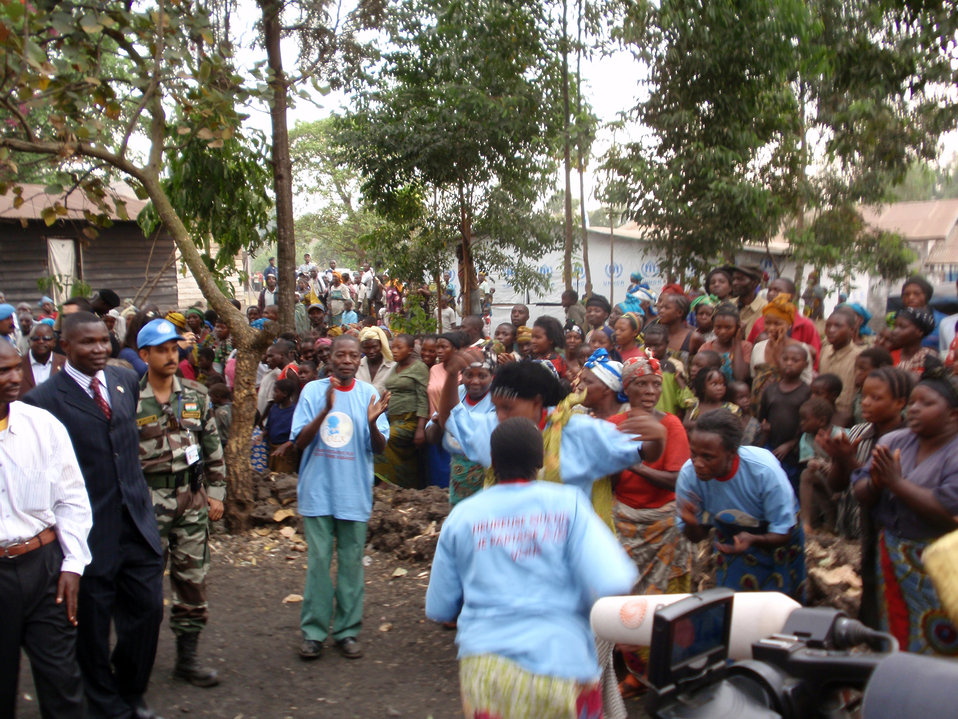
Behind the Scenes: Mugunga IDP Camp

The scene during the arrival of U.S. Secretary of State Hillary Rodham Clinton at the Mugunga Internally Displaced Person (IDP) Camp in Goma, Democratic Republic of Congo August 11, 2009.